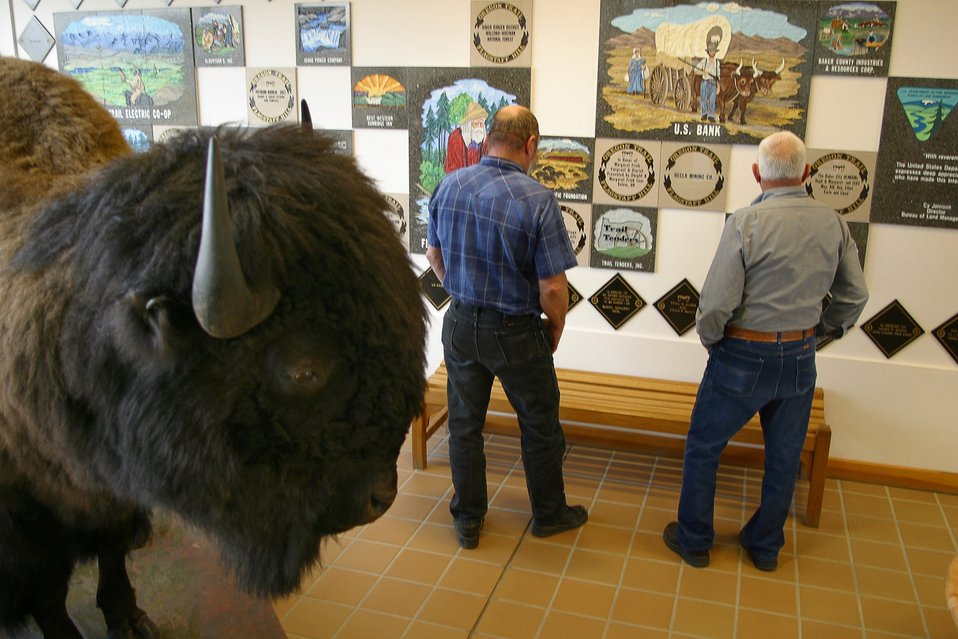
Visitors can relax and view contributor's tiles in the National Historic Oregon Trail Interpretive Center.